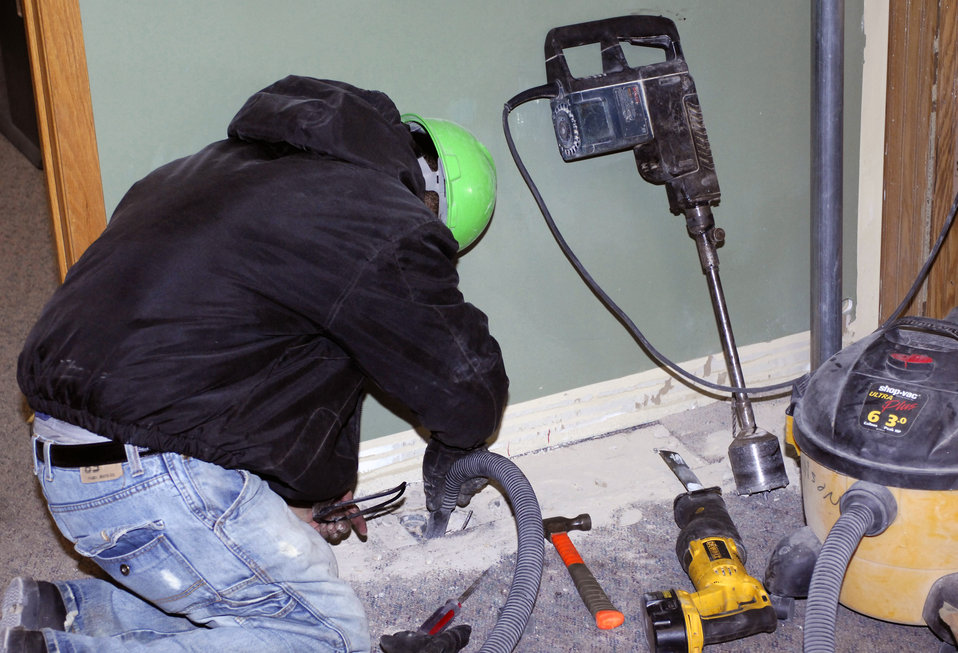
Geothermal heating to save money, energy at Minot

A construction worker drills a hole through a floor in the 5th Bomb Wing headquarters building while installing a geothermal heat system Dec. 15 at Minot Air Force Base, N.D. The building is currently undergoing construction to use geothermal heating by having 39 ground source heat pumps installed in the building along with 30 geothermal wells on the west side of the building.